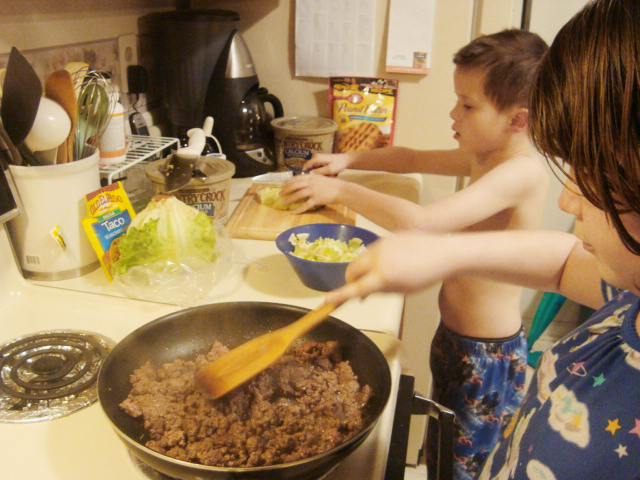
FitFamily program promotes healthy lifestyles

Kristina Urban, 10, cooks the beef while her brother, Paul, 6, shreds lettuce for dinner, March 17, 2010, at at Joint Base Langley-Eustis, Va. Once a week, Kristina and Paul are allowed to prepare a meal for